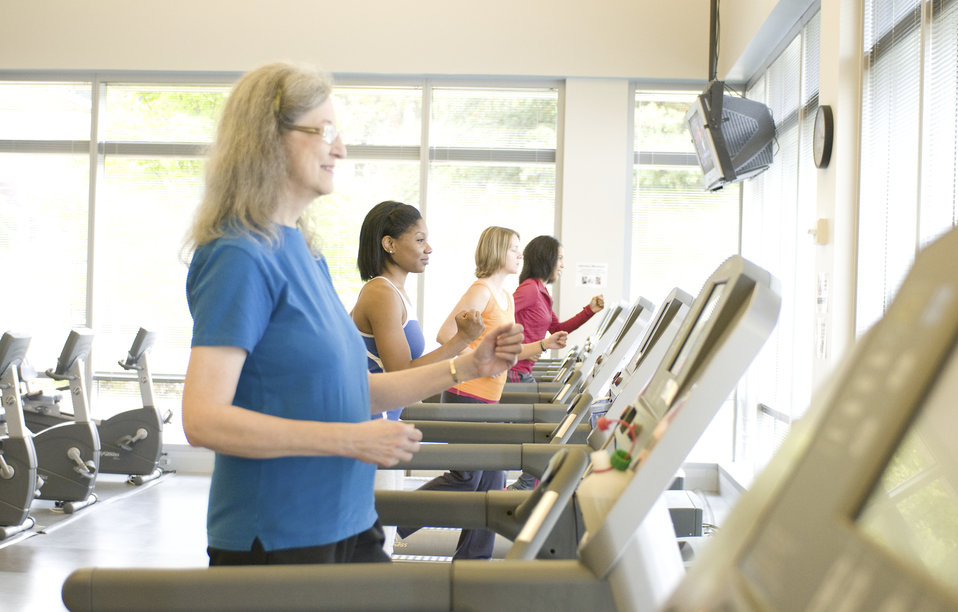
This image was captured on one of the Centers for Disease Control's (CDC) campuses, in the facility's fitness center, where a number of scheduled group classes are provided for employees' health and enjoyment. In this particular view, four women were making use of the facility's treadmills, taking part in some aerobic exercise.